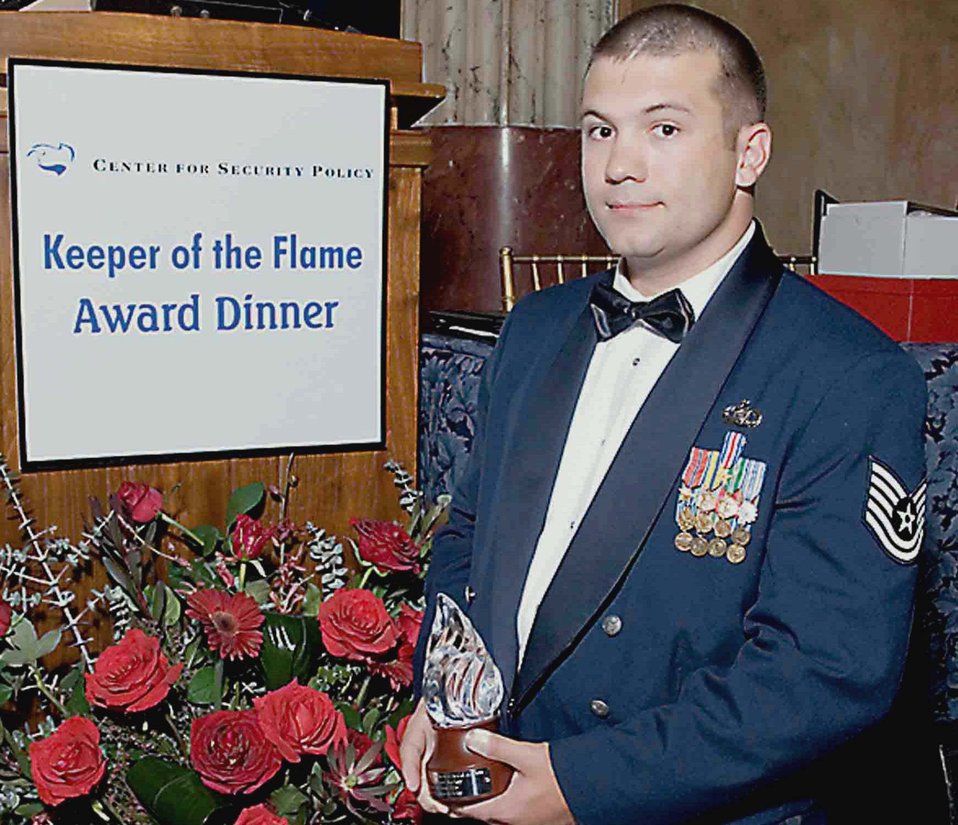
Heroism earns Airman prestigious award

Tech. Sgt. Stephen Achey received the Keeper of the Flame Award from the chairman of the Joint Chiefs of Staff Sept. 20 for his efforts in fighting the war on terrorism.